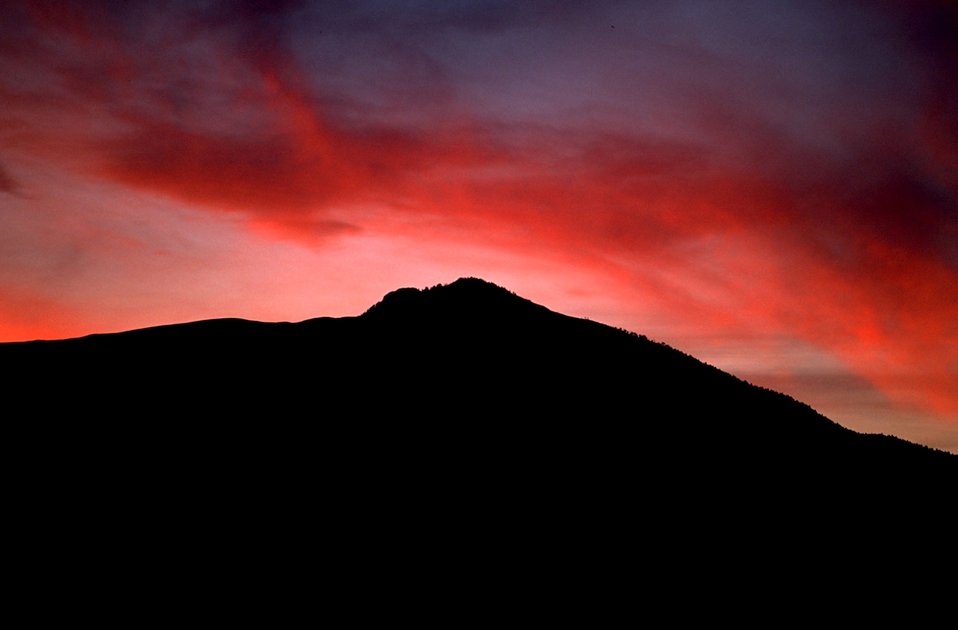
Silhouette of mountains at sunset